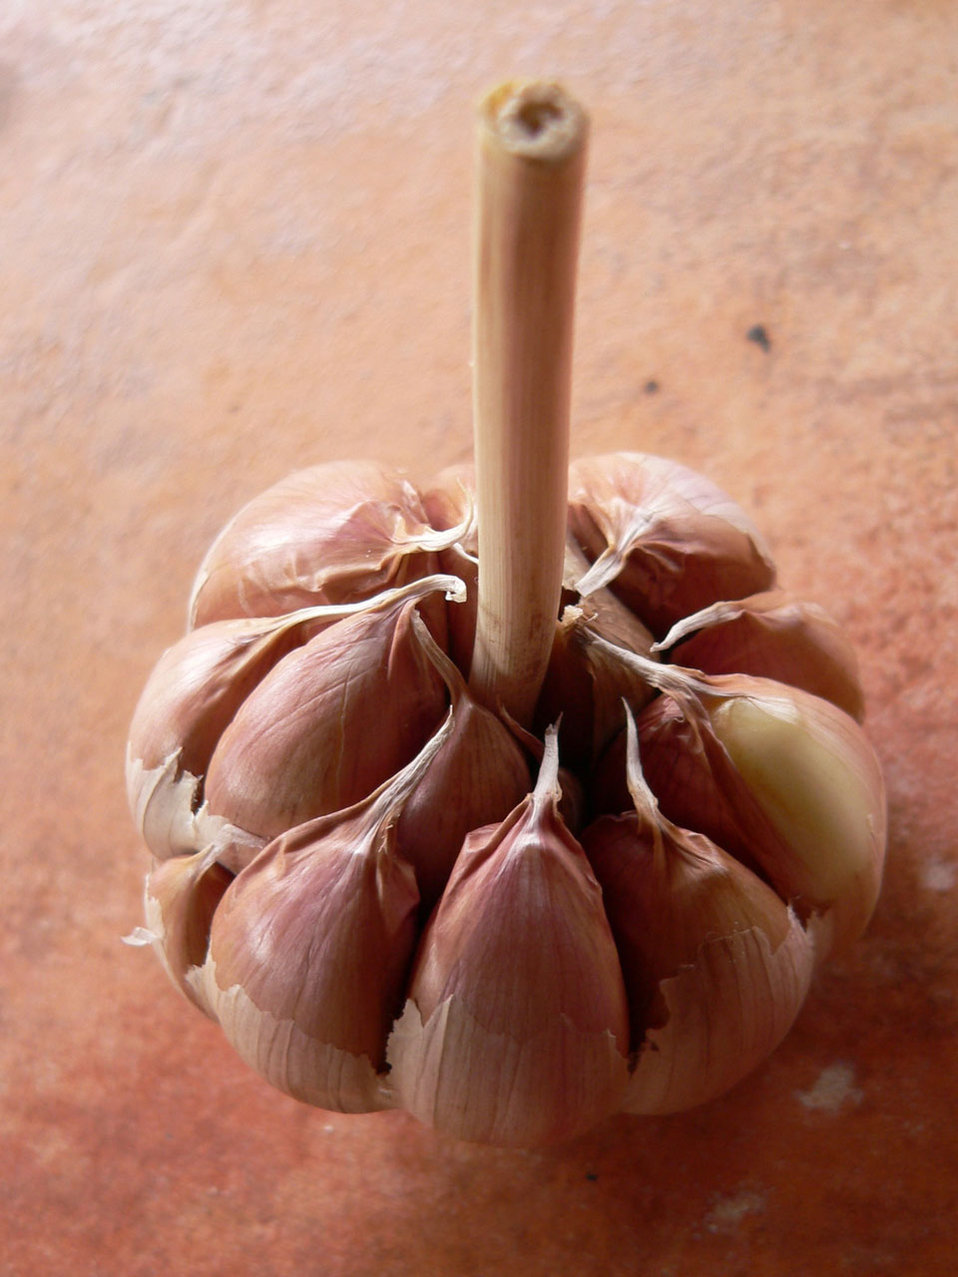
Garlic head

Garlic (allium sativum).